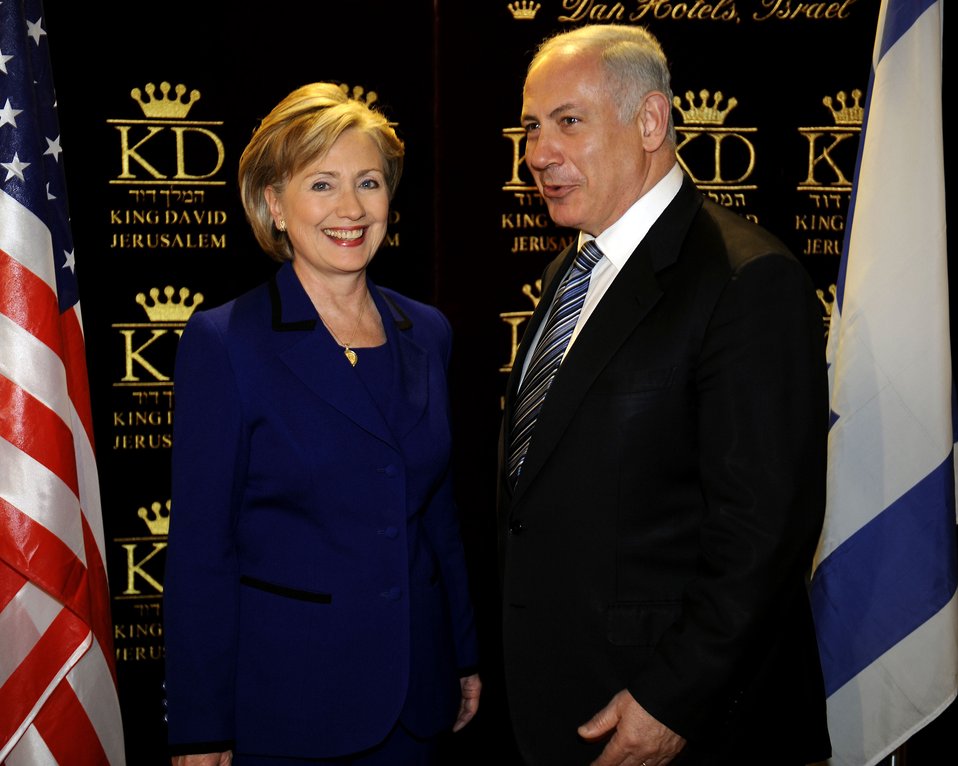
Secretary Clinton before her meeting with Israeli Prime Minister-Designate Benyamin Netanyahu at the King David Hotel, Jerusalem March 3, 2009.